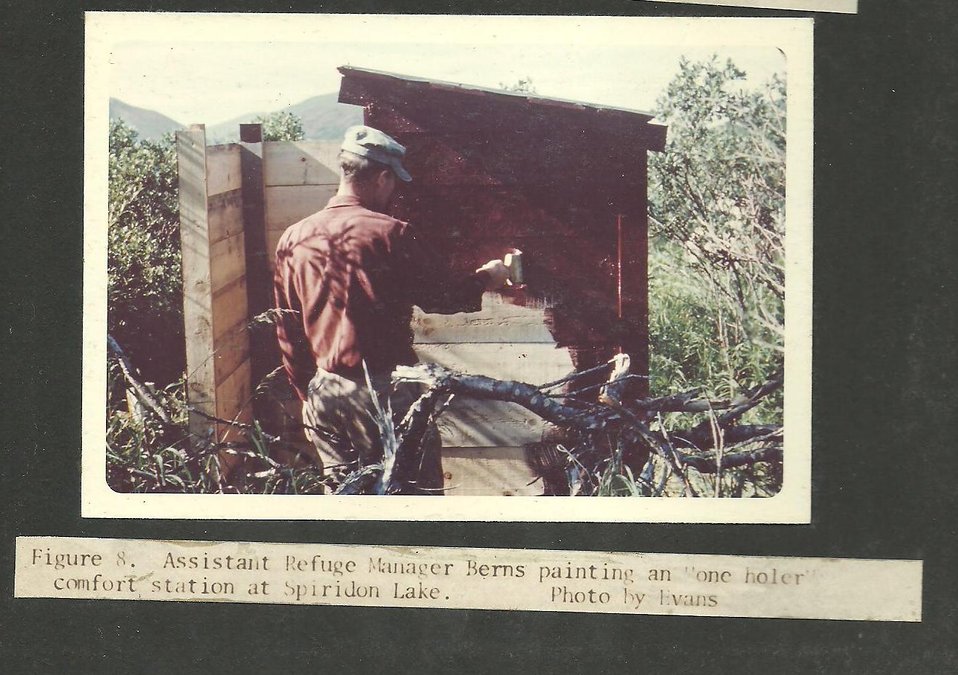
(1965) One Holer Comfort Station

Credit: USFWS

Source and Contact: Kodiak National Wildlife Refuge